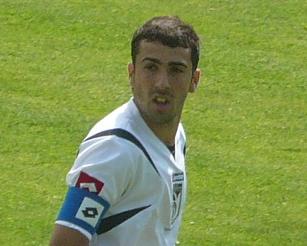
Romanian football player Dacian Varga